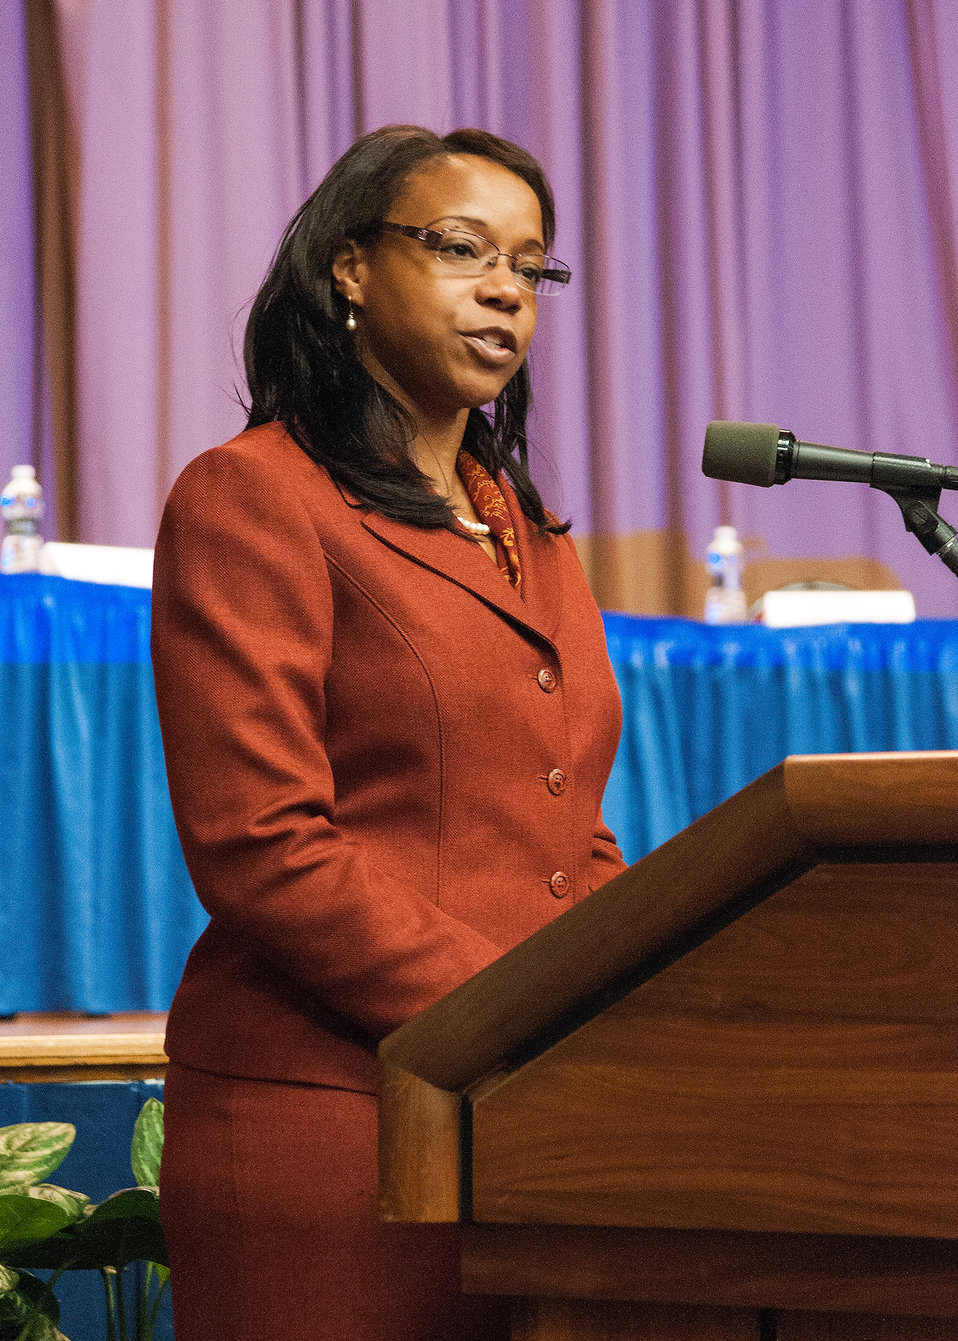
U.S. Department of Agriculture (USDA) Office of the Chief Information Officer and Mistress of Ceremony Ravoyne Payton welcomes employees and guests to the USDA OCIO National Women’s History Month celebration at the USDA Jefferson Auditorium in Washington, D.C. on Thursday, Mar. 14, 2013. The USDA OCIO is celebrating Women’s National History Month to commemorate women’s struggles, celebrate centuries of progress and reaffirm women’s steadfast commitment to the rights, security and dignity of women in America and around the world. The theme of this year’s celebration is, “Recognizing American Women’s Outstanding Contributions to the Field of Science, Technology, Engineering and Mathematics,” commonly referred to as STEM.